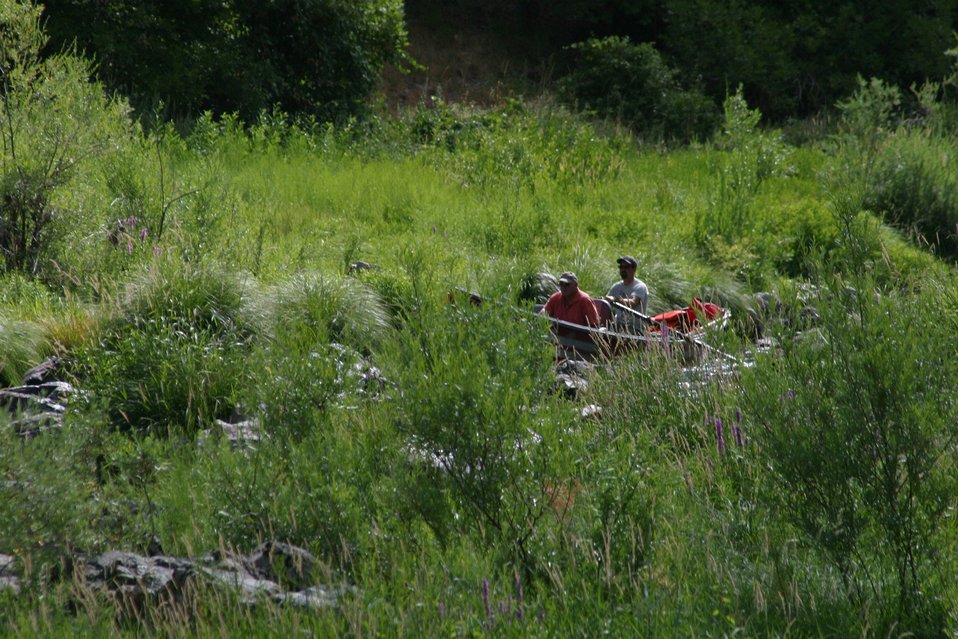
Rainie Falls Fish Ladder